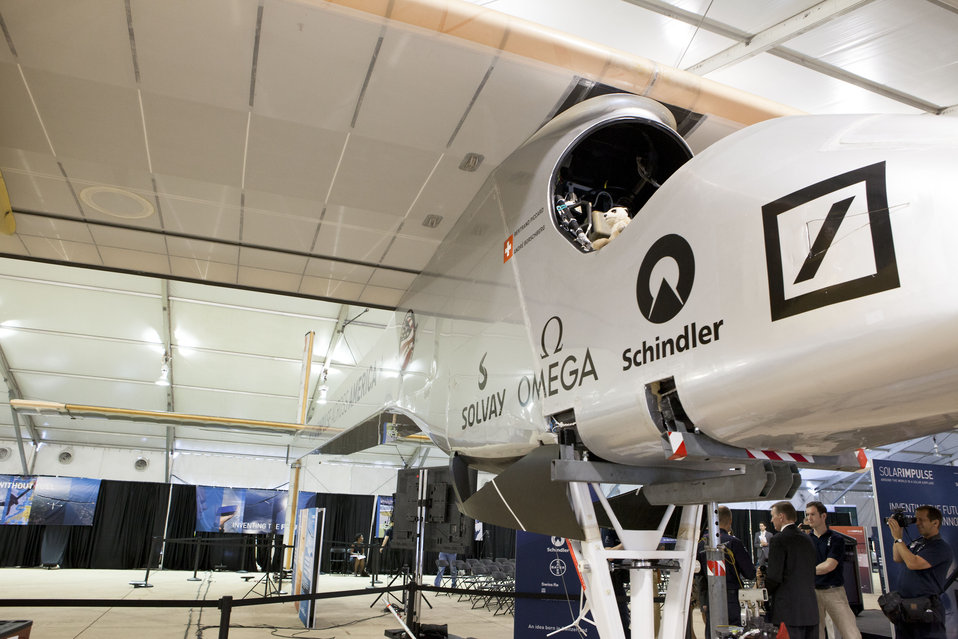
Solar Plane Lands in D.C.